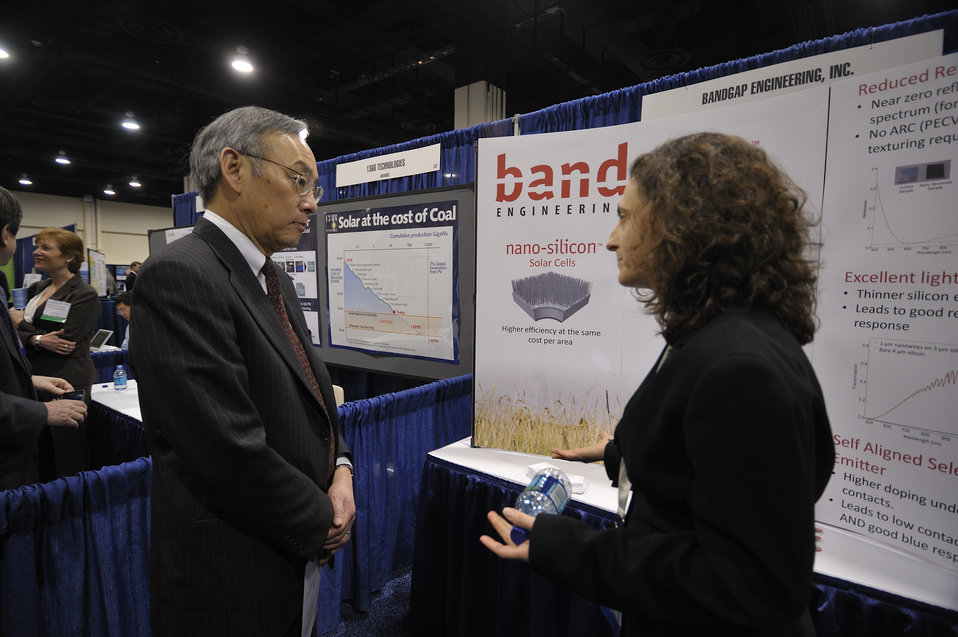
ARPA-E Energy Innovation Summit 2011, 52 of 83

Steven Chu, Secretary, United States Department of Energy, speaks with a representative from Bandgap Engineering the Summit's Technology Showcase.